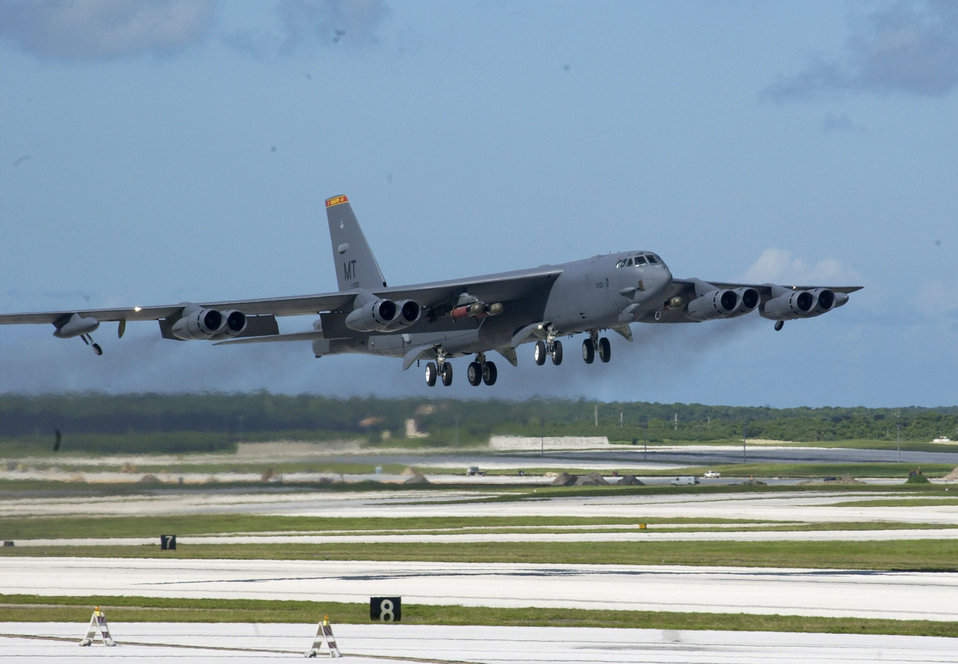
Air Force, Navy wrap up joint mine exercise

A B-52 Stratofortress takes off from Andersen Air Force Base, Guam, Nov. 3 armed with four Mk 56 mines. This sortie was the 10th and final mission of a week-long joint sea mine-laying exercise with the Navy. The B-52s dropped a total of 96 inert mines on two practice mine fields that were each three miles long and a mile wide.